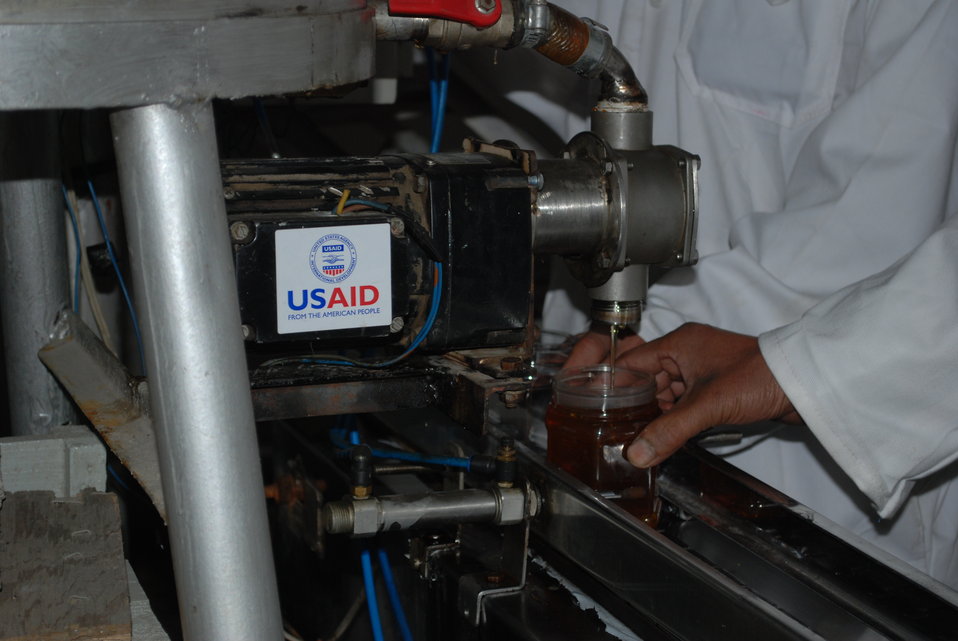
'On the Road' in Nangarhar Province